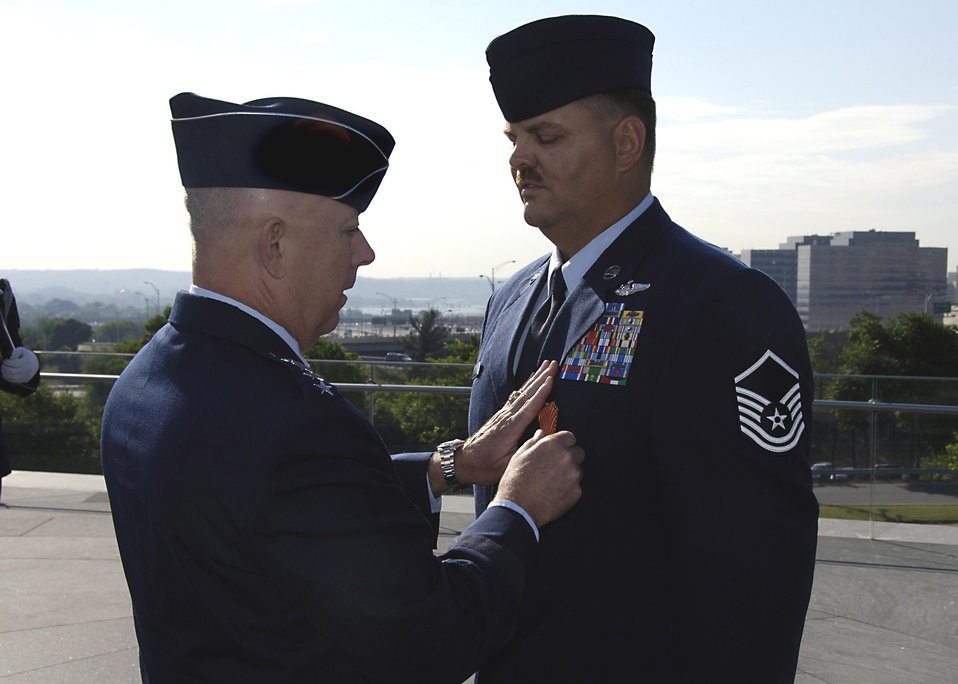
Combat Action Medal

Air Force Chief of Staff Gen. T. Michael Moseley awards an Air Force Combat Action Medal to Master Sgt. Byron Allen at the Air Force Memorial June 12 in Arlington, Va., June 12. Sergeant Allen was one of six Airmen to receive the medal, awarded to Airmen who have been directly in harm's way, engaging enemy forces. Sergeant Allen was serving as an MH-53 aerial gunner was conducting a combat resupply mission when his aircraft came under enemy fire. Sergeant Allen is from the 1st Special Operations Group, Hurlburt Field, Fla.